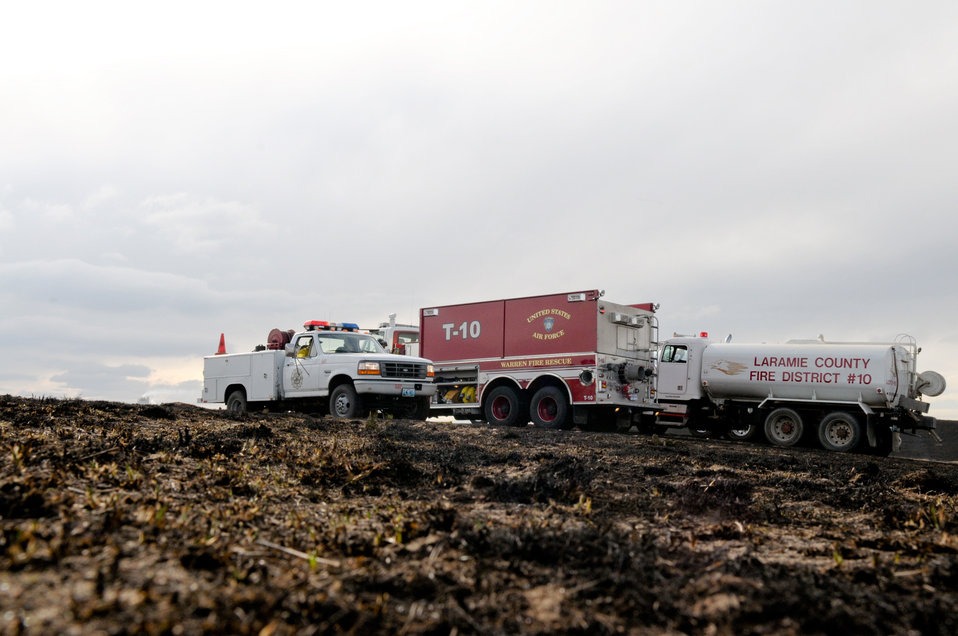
F.E. Warren members help fight brushfire in Wyoming

Members from the F.E. Warren Air Force Base Fire Department, Laramie County Fire Districts 1, 2, 8 and 10, as well as the Wyoming Air National Guard respond to the brushfire two miles southwest of the base March 31, 2010.